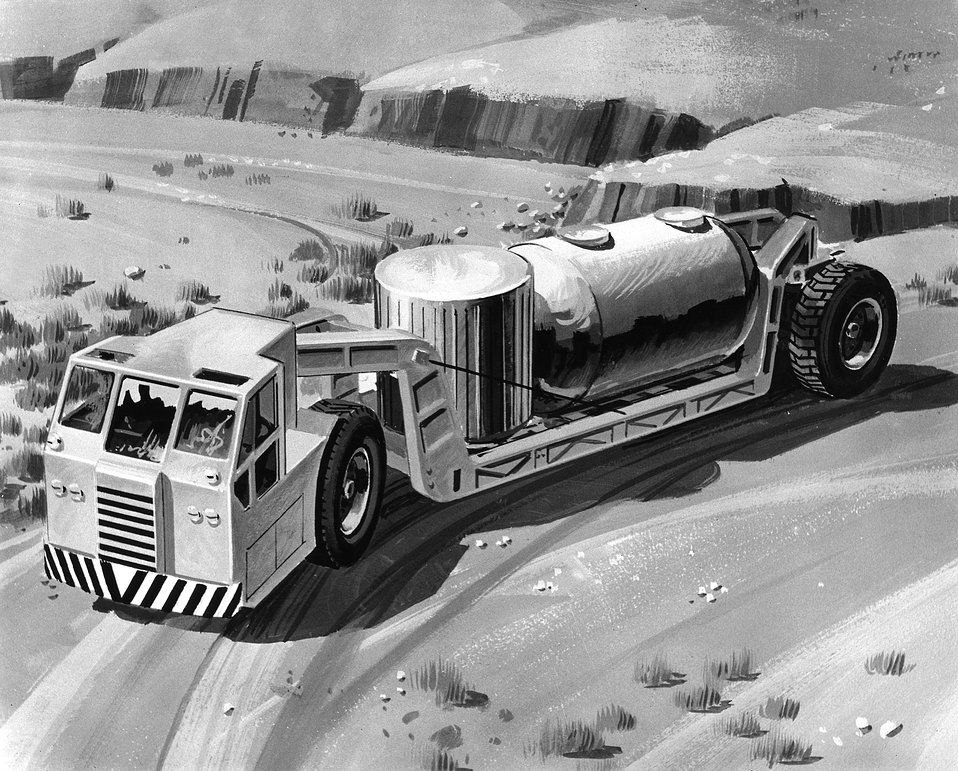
Mobile ground use of SNAP nuclear reactor power system is shown in this artist's conception.